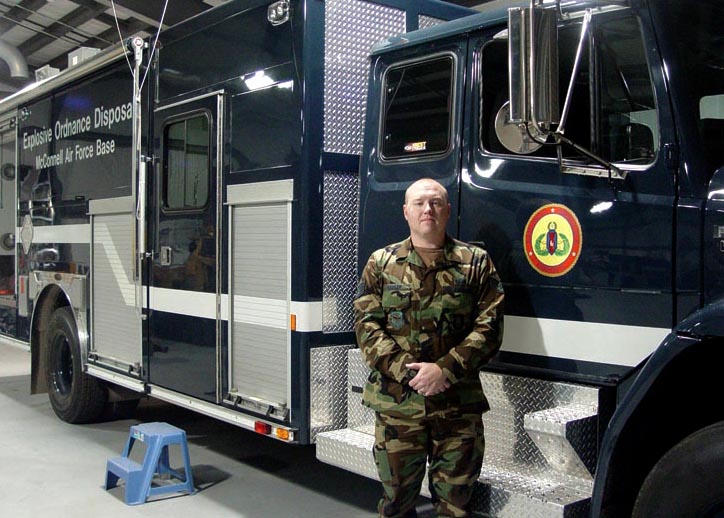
MCCONNELL AIR FORCE BASE, Kan. -- Staff Sgt. Phillip Hauser stands next to the new Air Force Explosive Ordnance Disposal vehicle he helped design. This vehicle will serve as the benchmark for all Air Force EOD vehicles. Sergeant Hauser is an EOD technician with the 22nd Civil Engineering Squadron here.